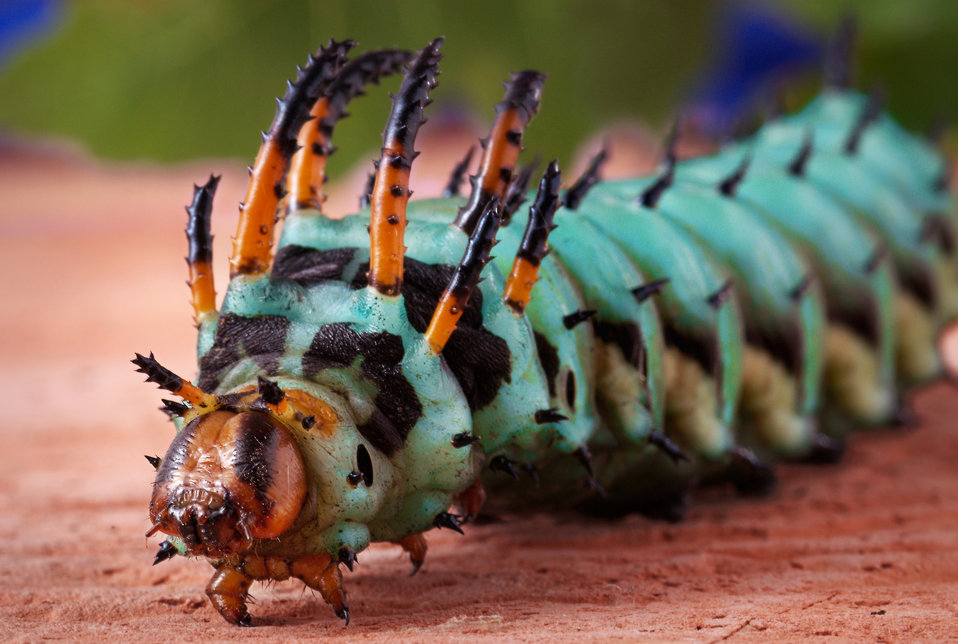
This 2008 image depicts a slightly anterior oblique view of a Hickory Horned Devil caterpillar's head region. It's hard to imagine, but keep in mind that this caterpillar is actually a developmental stage, or 'instar', through which the creature passes before becoming an adult, or 'imago' Regal Moth, Citheronia regalis. Just prior to entering its pupal stage, where it will metamorphose into the adult moth, the caterpillar will change its appearance, adopting more of a turquoise coloration, which looked to be the case in the specimen photographed here.